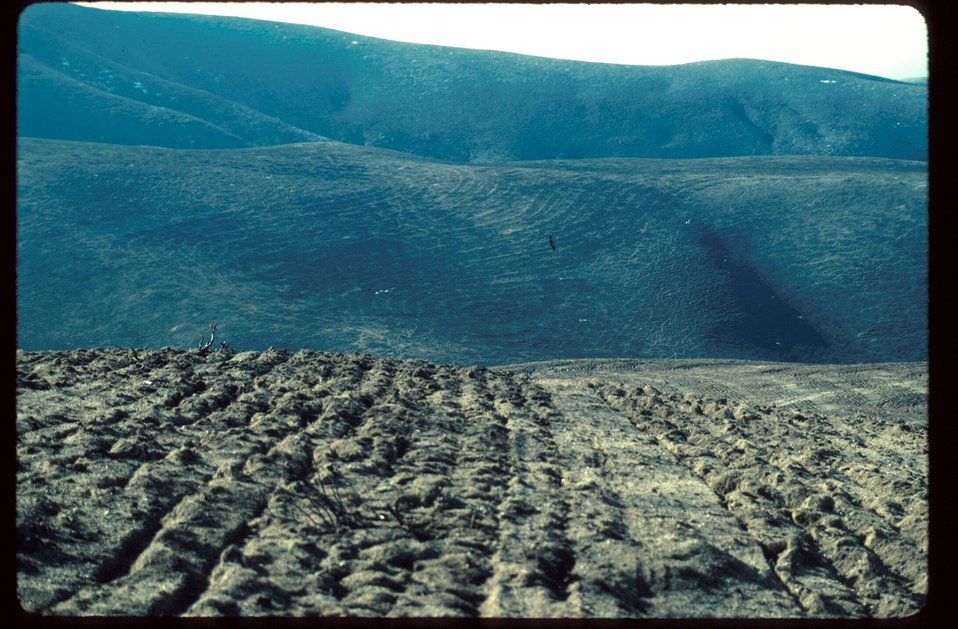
Range Restoration Project